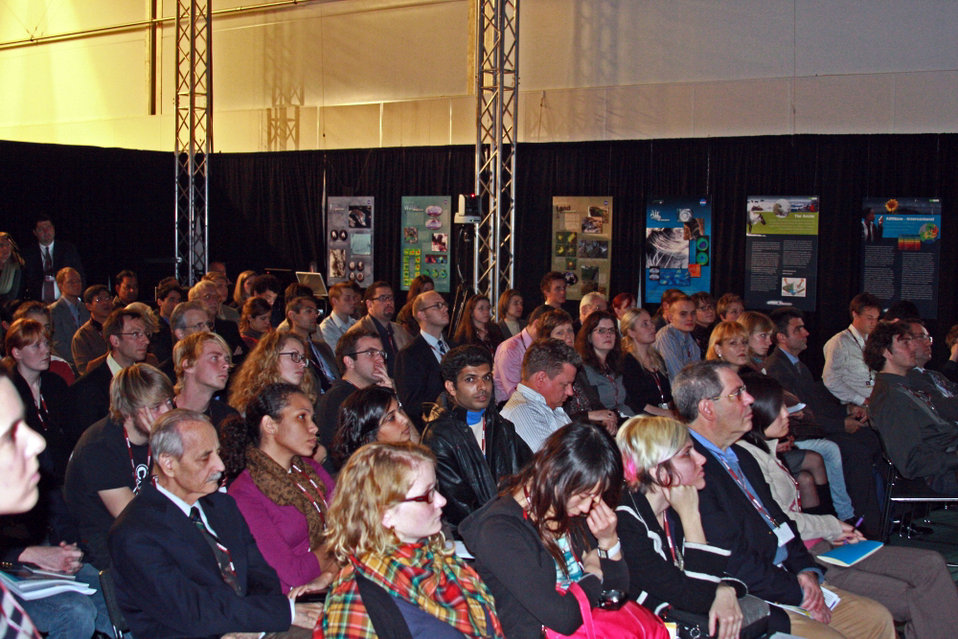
COP-15 attendees watch a presentation at the U.S. Center during COP15 (Conference of the Parties to the UN Framework Convention on Climate Change) in Copenhagen, Denmark December 10, 2009.